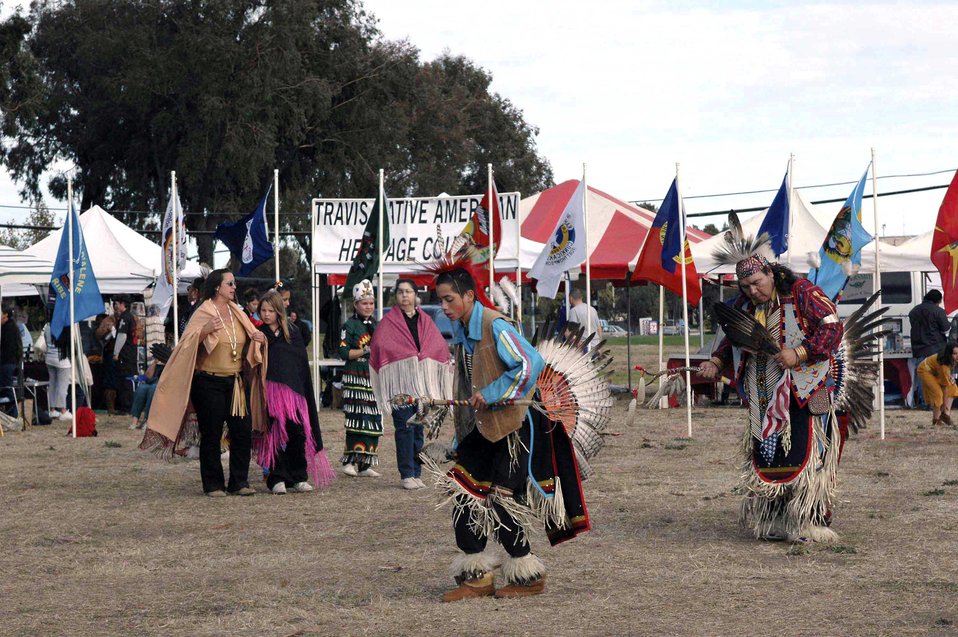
Powwow

TRAVIS AIR FORCE BASE, Calif. (AFPN) -- Native Americans participate in a traditional dance during the fourth annual Veterans Pow Wow here. About 20 separate Native American nations were represented in the two-day event Nov. 5 and 6.